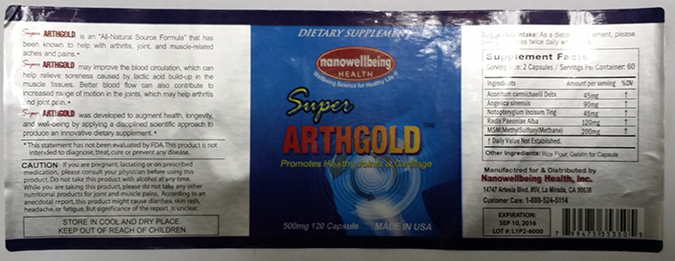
RECALLED – Dietary Supplement - Super Arthgold

April 21, 2014 – Product Recall – Nano Well-being Health Inc. Issues Voluntary Nationwide Recall of Super Arthgold Due to Undeclared Ingredients.